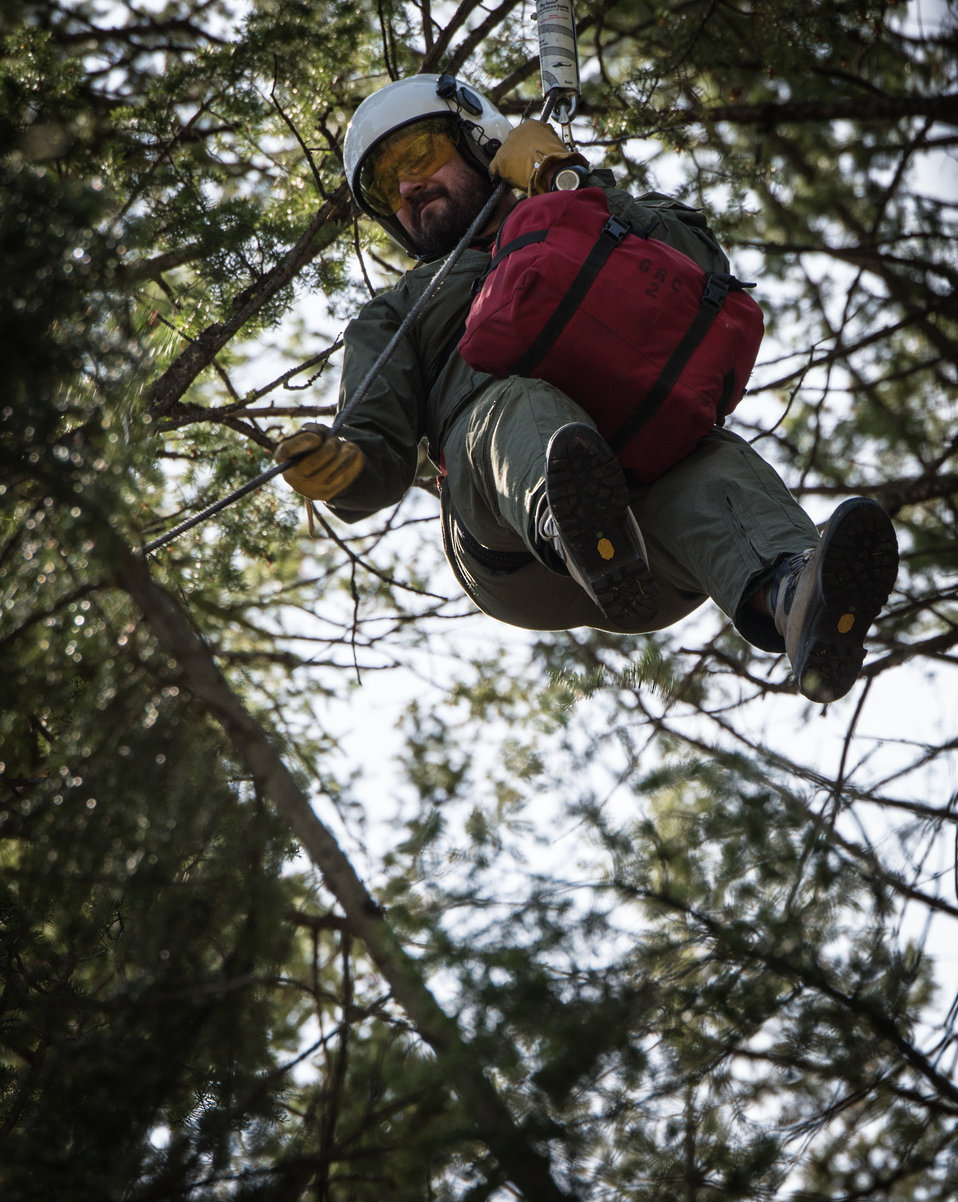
Veteran wildland firefighter rappellers use various techniques to negotiate the wind from the helicopter rotor blades above them, and away from tree branches, beside and below, as they perform a controlled and safe descent at the U.S. Department of Agriculture (USDA) U.S. Forest Service (USFS) National Helicopter Rappel Program’s Rappel Academy at Salmon Air Base in Salmon, ID on Thursday, May 15, 2014. From May 12, 2014, 72 veteran rappellers from all over the nation, 30 support staff, and three helicopters with flight crews attend the training at Salmon Air Base. Participants will rappel into the Perreau Creek area. The annual training is delivered in accordance with the National Rappel Operations Guide; strengthen leadership, teamwork, and communications within the rappel community, and produces quality aerial delivered firefighters for use in fire and aviation operations. The USDA Forest Service National Helicopter Rappel Program’s primary mission is initial attack. Rappel crews may be utilized for large fire support, all hazard incident operations, and resource management objectives.